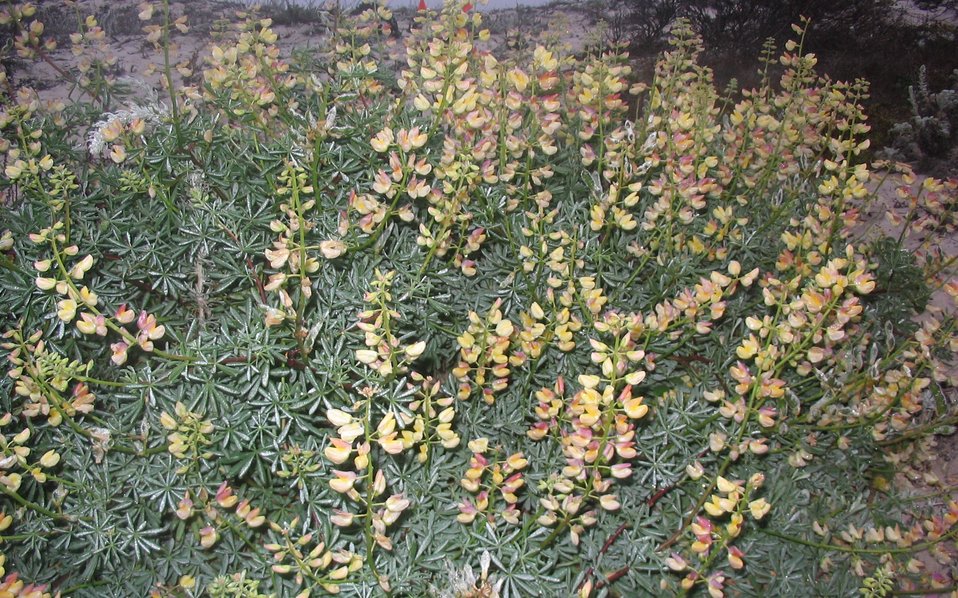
Tree lupine (Lupinus arboreus)